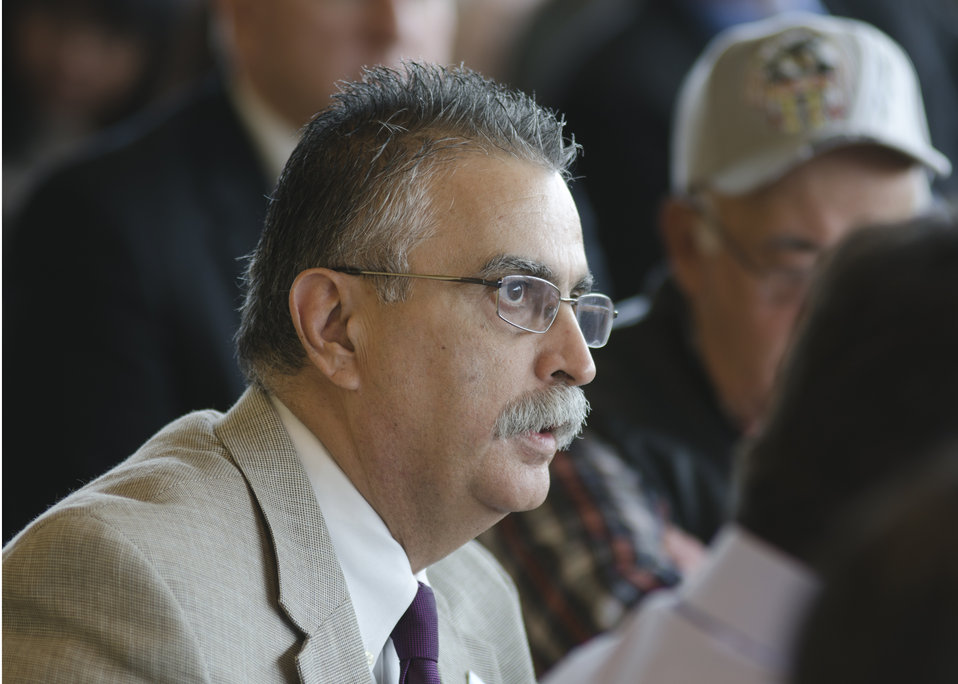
U.S. Department of Agriculture’s (USDA) Farm Service Agency Administrator Juan Garcia speaks at the first business meeting of the U.S. Department of Agriculture’s (USDA) Council for Native American Farming and Ranching (CNAFR) held at the National Museum of the American Indian in Washington, D.C., on Tuesday, Aug. 14, 2012. CNAFR was created to advise the Secretary on ways to eliminate barriers to participation for Native American Farmers and Ranchers in USDA programs. The Council was established as part of the Keepseagle settlement, and is conducted under the oversight of USDA's Office of Tribal Relations under the Office of the Secretary of Agriculture.